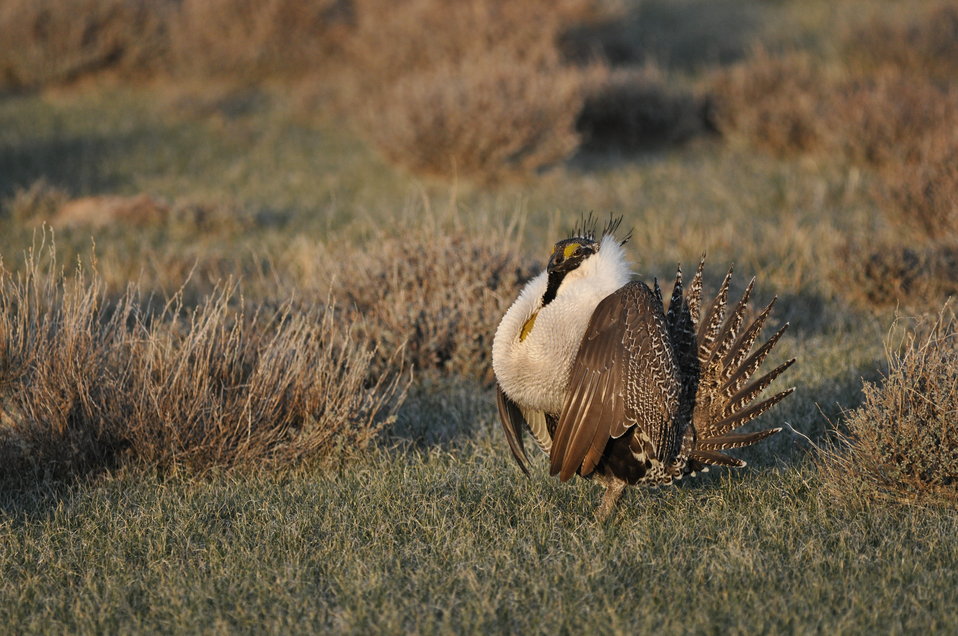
Greater Sage-Grouse

Photo Credit: Jeannie Stafford/USFWS
A greater sage-grouse male struts at a lek (dancing or mating ground) near Bridgeport, CA to attract a mate.